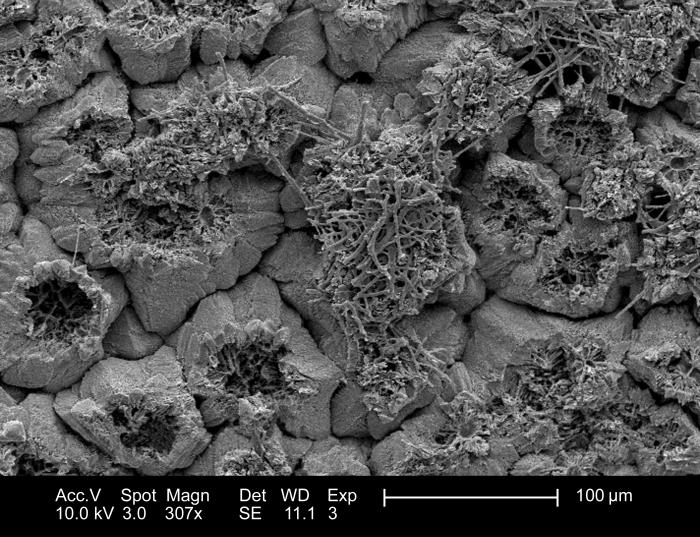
This 2005 scanning electron micrograph (SEM) depicted the morphologic characteristics of the inner surface of an unidentified bird's eggshell. In this view the details revealed included the surfaces of the mammillary cones, some of which are hollowed-out leaving behind what are known as 'mammillary voids', and a number of intermammillary pores, i.e., canals that span the distance between the shell's outer cuticle layer, and the interior membranous layers. It is through these pores that the diffusion of gasses takes place. It has been found that the distribution of these pores is directly related to the strength and durability, and the respiratory efficiency of the shell structure on a regional basis. This shell fragment was retrieved from the grounds of the Decatur, Georgia suburbs; Magnified 307x.